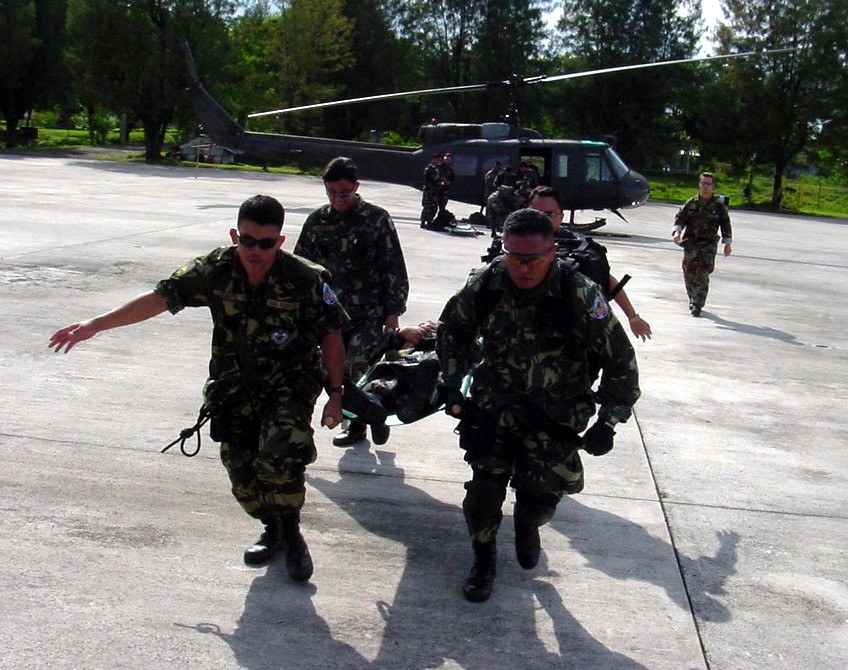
Training foreign forces in air force special ops

PHILIPPINES -- A 6th Special Operations Squadron adviser and a Philippine air force range security team conduct medical evacuation procedures during a combined training exercise here. The 6th SOS is from Hurlburt Field, Fla.